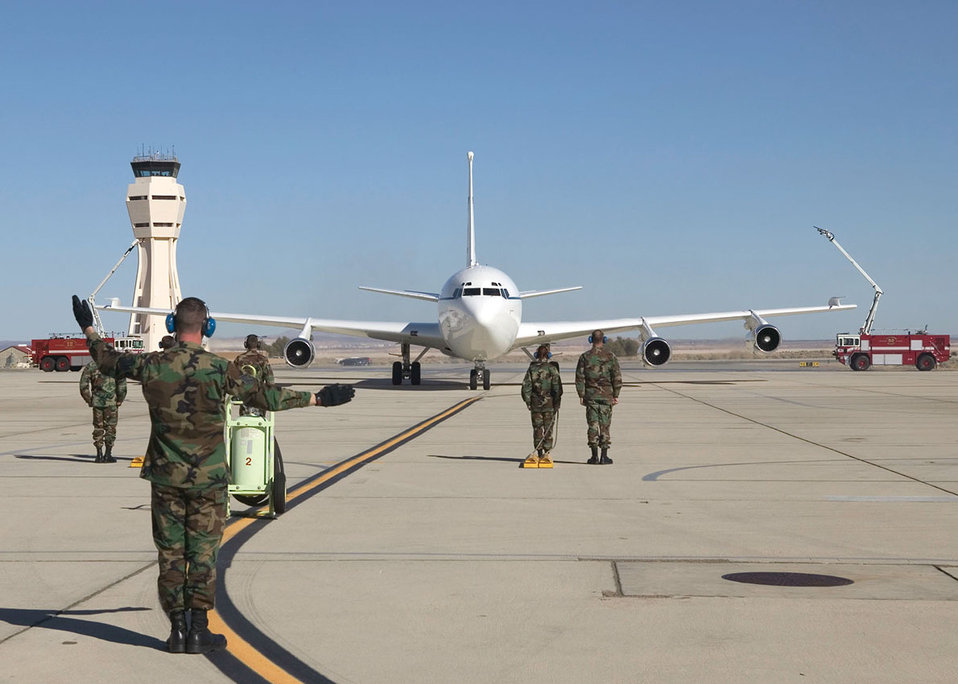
Speckled Trout

EDWARDS AIR FORCE BASE, Calif. (AFPN) -- An Airman parks the C-135C known as the Speckled Trout after the plane's fini-flight here Jan. 13. The aircraft was officially retired Feb. 10. Over the past 31 years, the aircraft served senior military leaders with worldwide airlift. It also conducted avionics and communications testing here.